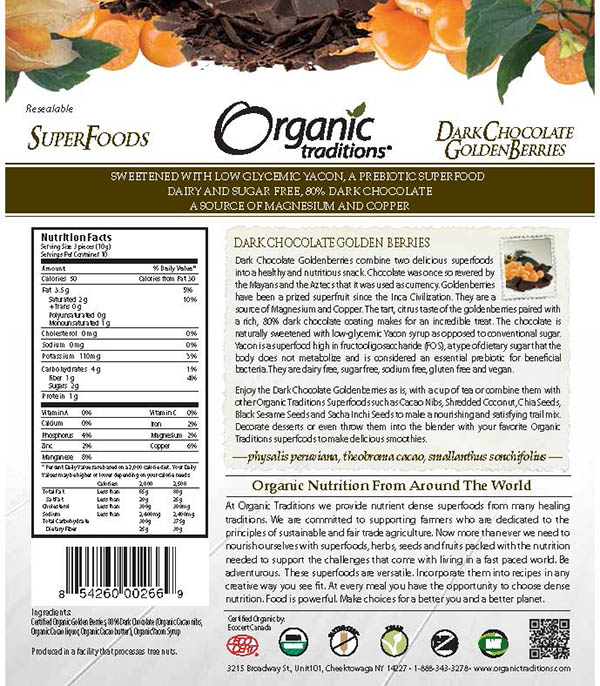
RECALLED – Candy

April 14, 2014 – Product Recall – Health Matters America Inc. Issues Allergy Alert on Undeclared Milk in Organic Traditions Brand Dark Chocolate Golden Berries and Dark Chocolate Sacha Inchi Seeds.